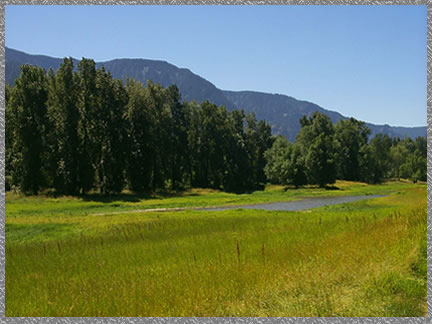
Grasslands - Pierce NWR

For a relatively small landmass the Pierce Refuge is rich in natural resources. The habitats of the Refuge include include wetlands, grasslands, riparian forests, decideous woodlands of ash and Oregon white oak, coniferous forests, streams, seeps, and springs.